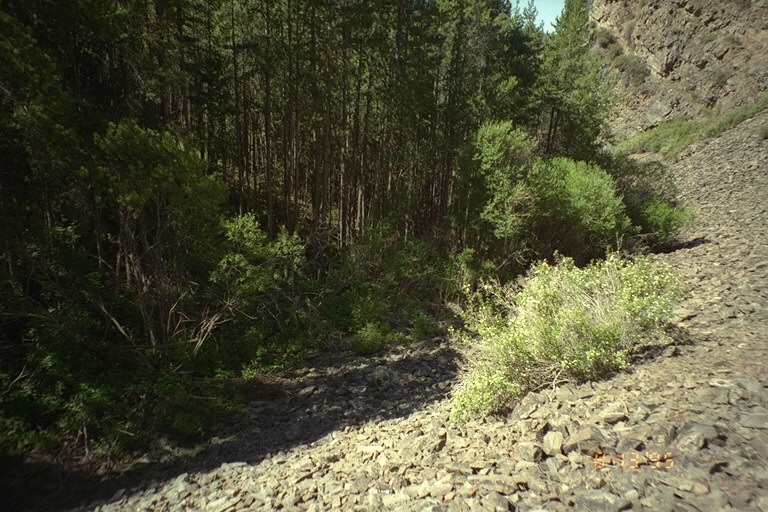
Riparian area Public Lands Salmon Field Office UCSC Upper Columbia Salmon Clearwater District